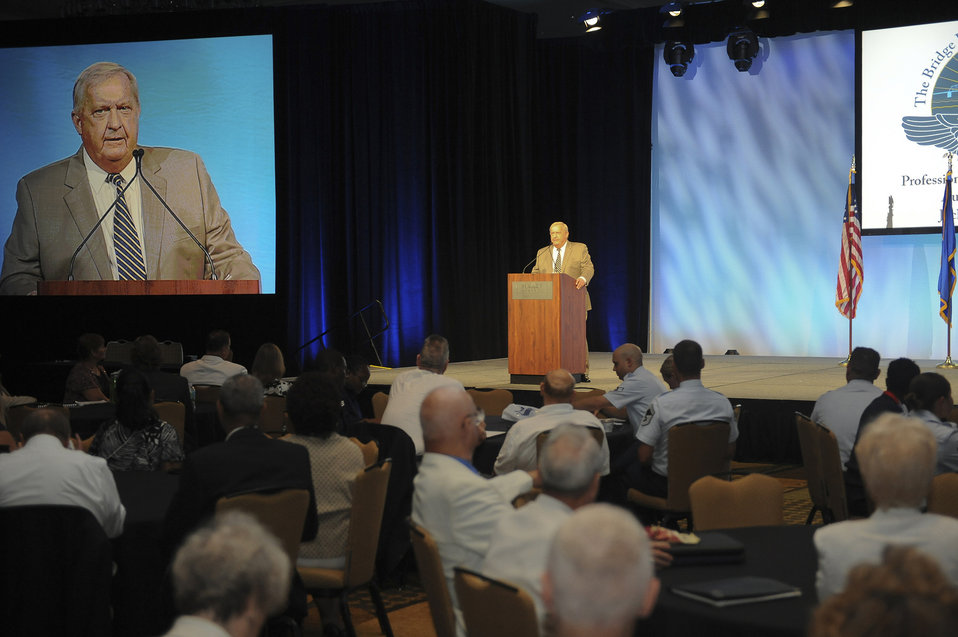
AFSA Convention

Retired Chief Master Sgt. of the Air Force James Binnicker speaks about the Enlisted Village at the 2012 Professional Airmen's Conference in Jacksonville, Fla., Aug. 12, 2012. Binnicker, the ninth CMSAF, now serves as the president and chief executive officer of the Air Force Enlisted Village, a non-profit charity located in Fort Walton Beach, Fla. The Enlisted Village provides a home for the surviving spouses of enlisted military personnel.